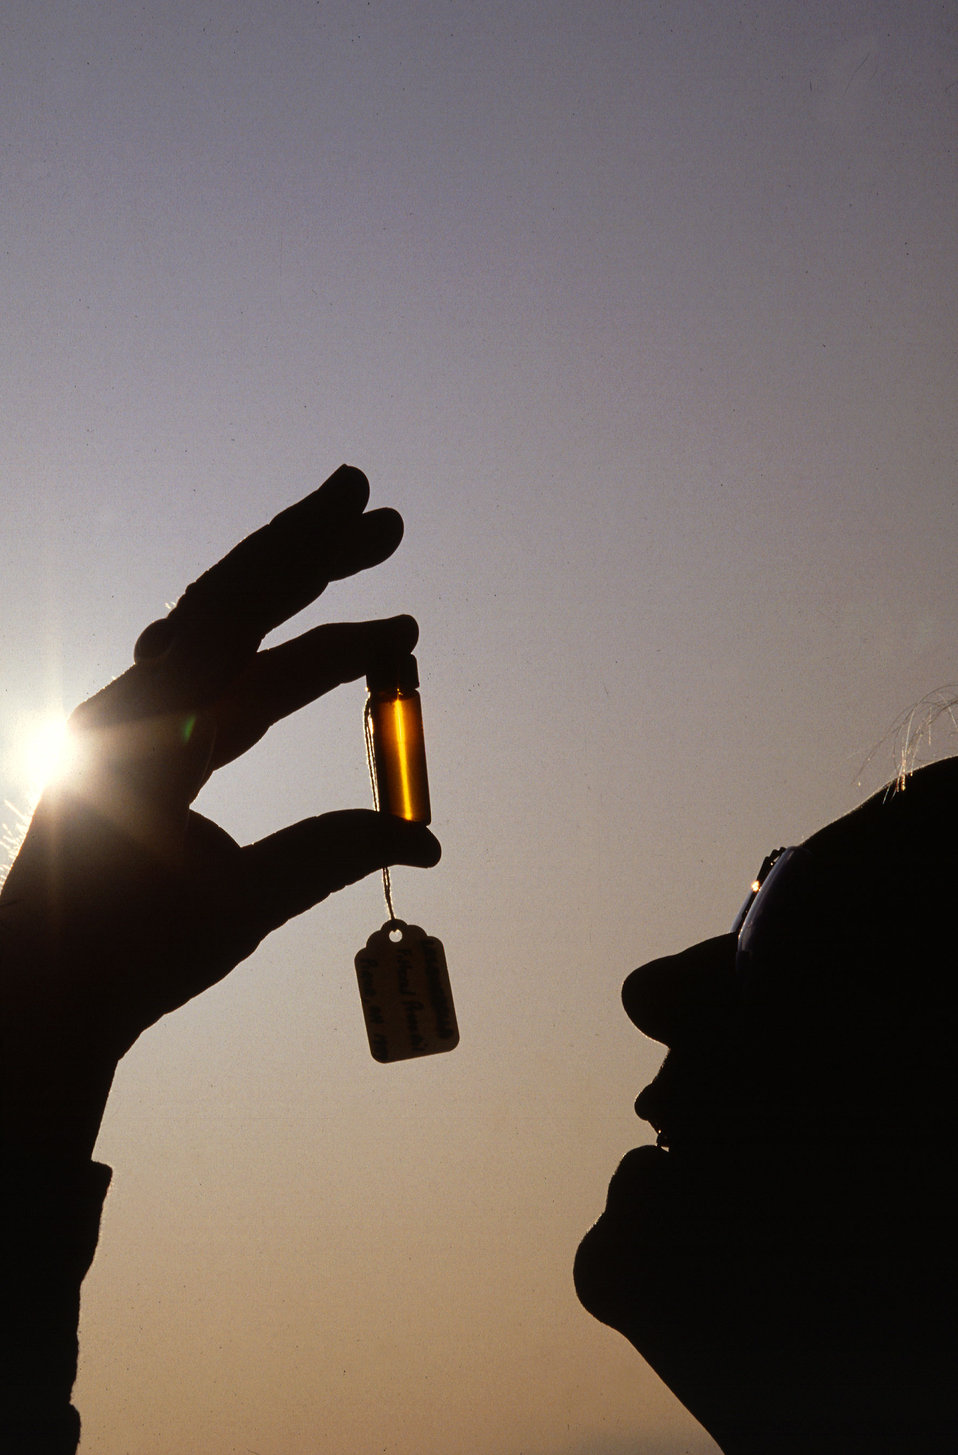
U.S. Department of Agriculture (USDA) Agriculture Research Service (ARS) geneticist Anson E. Thompson holds a vial of lesquerella oil processed and refined at the USDA ARS National Center for Agricultural Utilization Research in Peoria, IL.